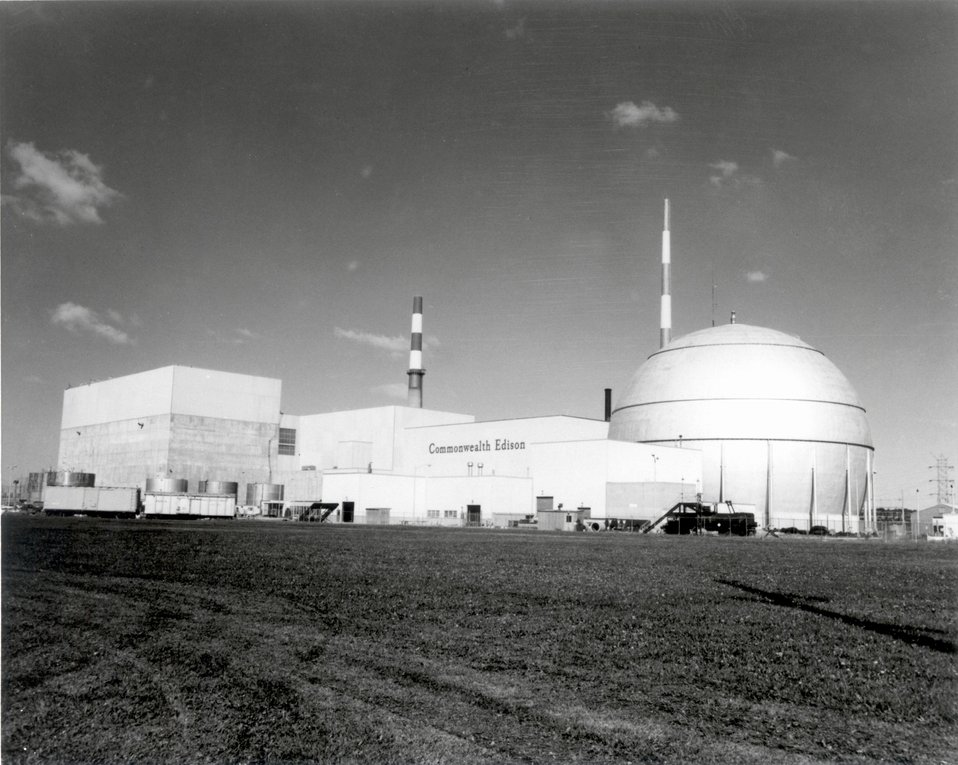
An exterior view of Commonwealth Edison Company's Dresden nuclear power station near Morris, Illinois. Circa 1970.